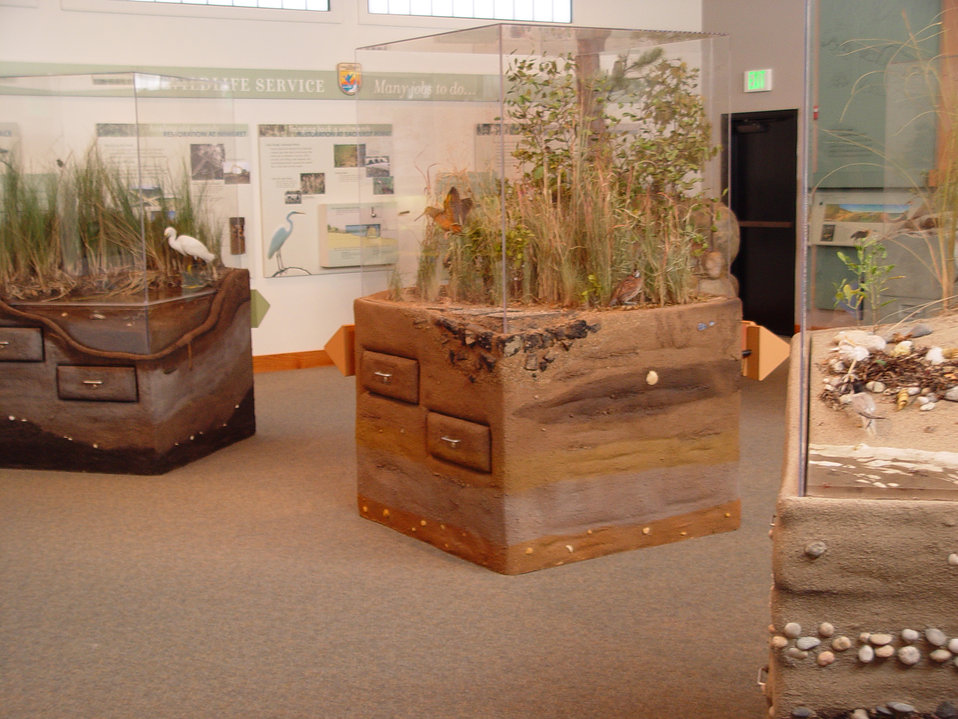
Kettle Pond Visitor Center in Charlestown, RI.